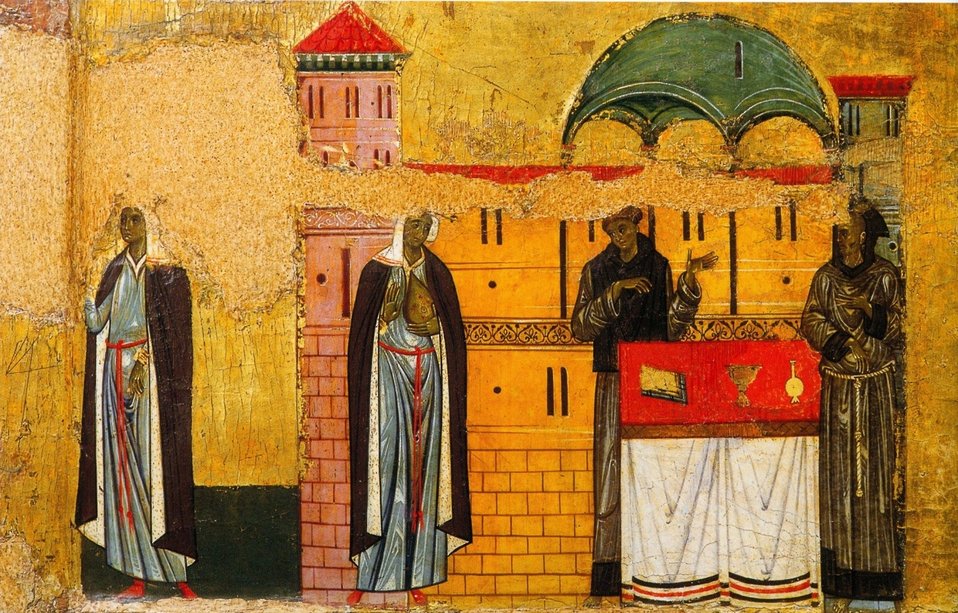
6 Giunta Pisano. St. Francisc and six stories from his life. Detail. Ca. 1250-60. Museo San Matteo, Pisa